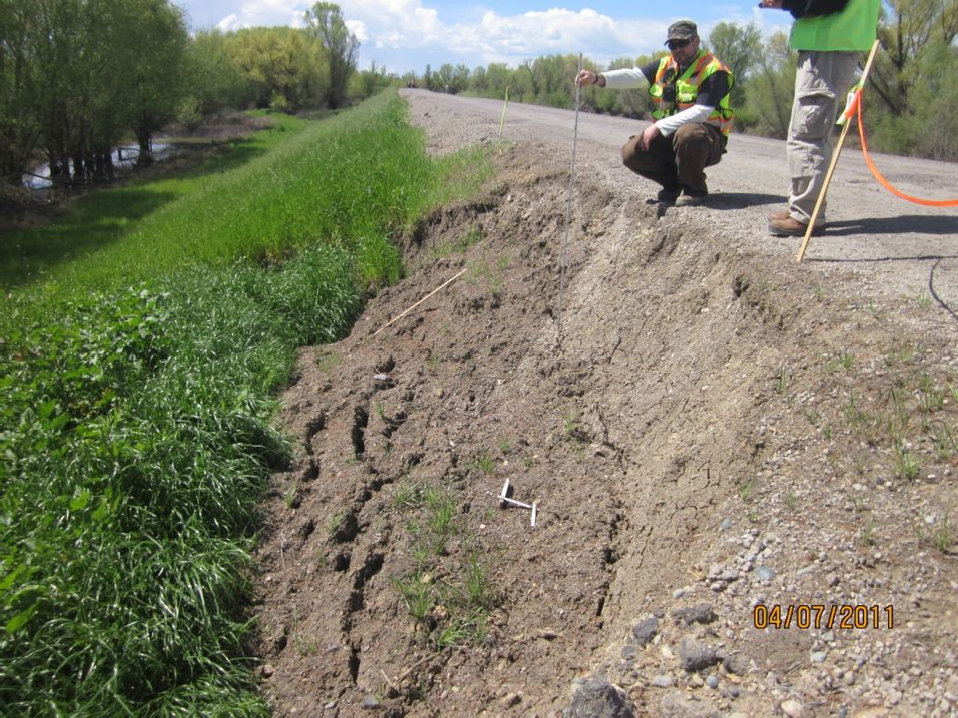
Levee bank caving in the Stockton area

Levee bank caving in the Stockton, Calif., area, shown during a levee inspection in 2011. The U.S. Army Corps of Engineers inspects levees in its Rehabilitation and Inspection Program to ensure levees don’t pose an unacceptable risk to lives and to provide levee managers and residents with detailed information on the condition of levees to help them make informed decisions about safety.